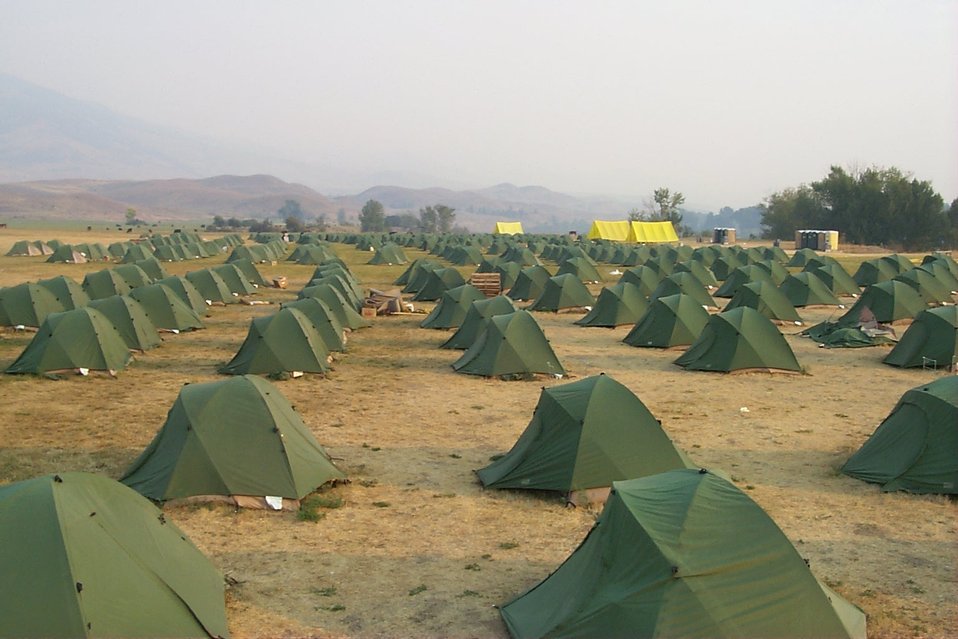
Camp Fire Clearwater Fire Salmon Field Office USRD Upper Snake River District